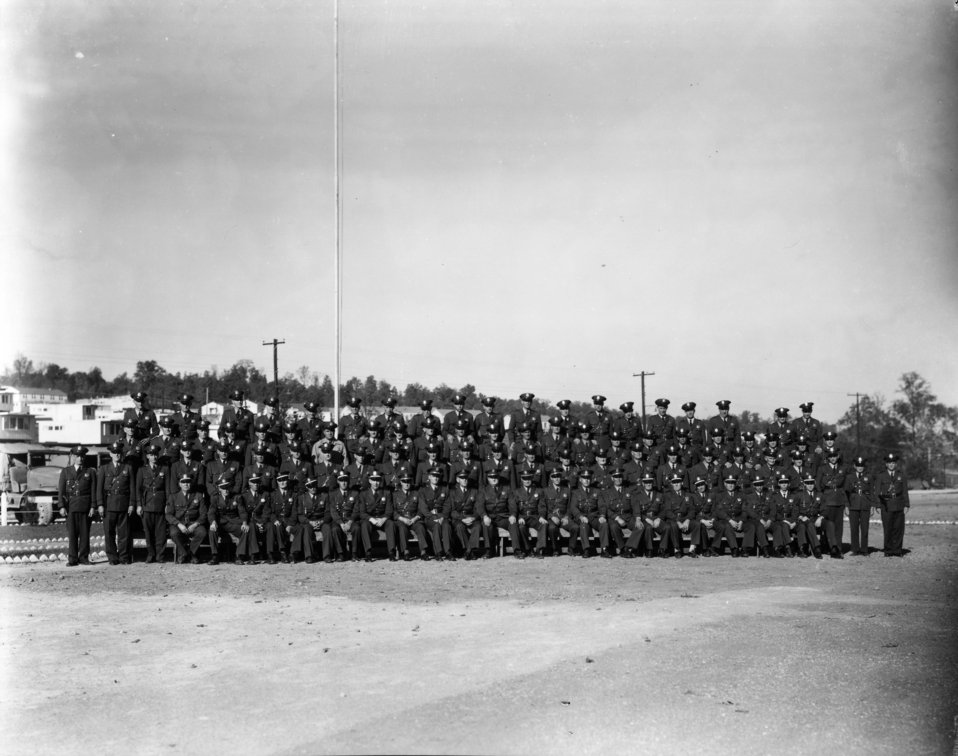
Security at Oak Ridge